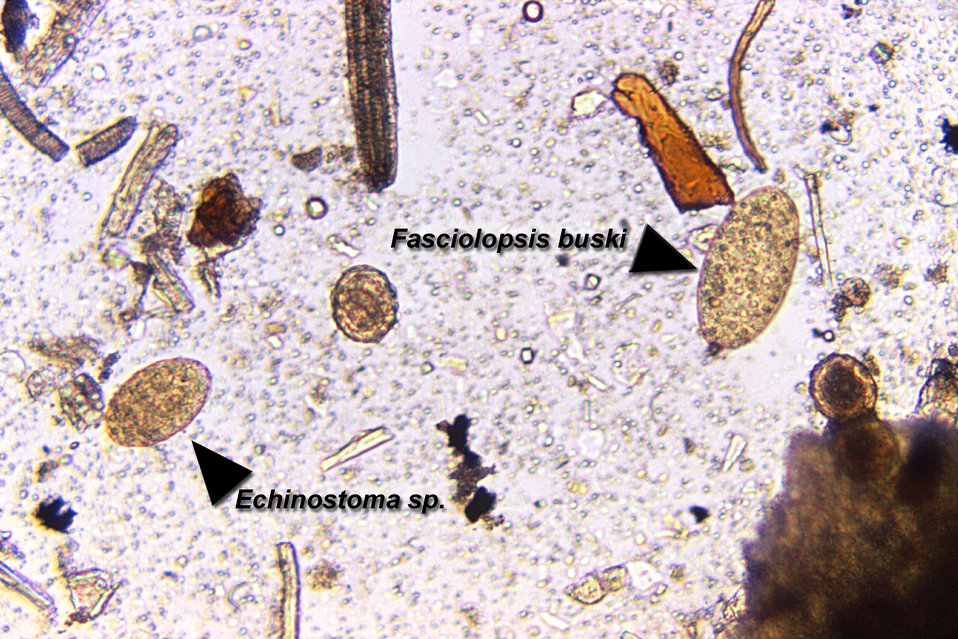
Magnified 125X, this photomicrograph revealed the presence of two trematode eggs, a Fasciolopsis buski egg on the right, and an Echinostoma sp. egg seen of the left, which were found in an unstained formalin-preserved stool sample. Note how much larger the F. buski is compared to that of the Echinostoma sp. egg. F. buski trematodes are the largest intestinal flukes found parasitizing human beings. These flukes inhabit Asia and the Indian subcontinent, especially in areas where humans raise pigs, and consume freshwater plants.